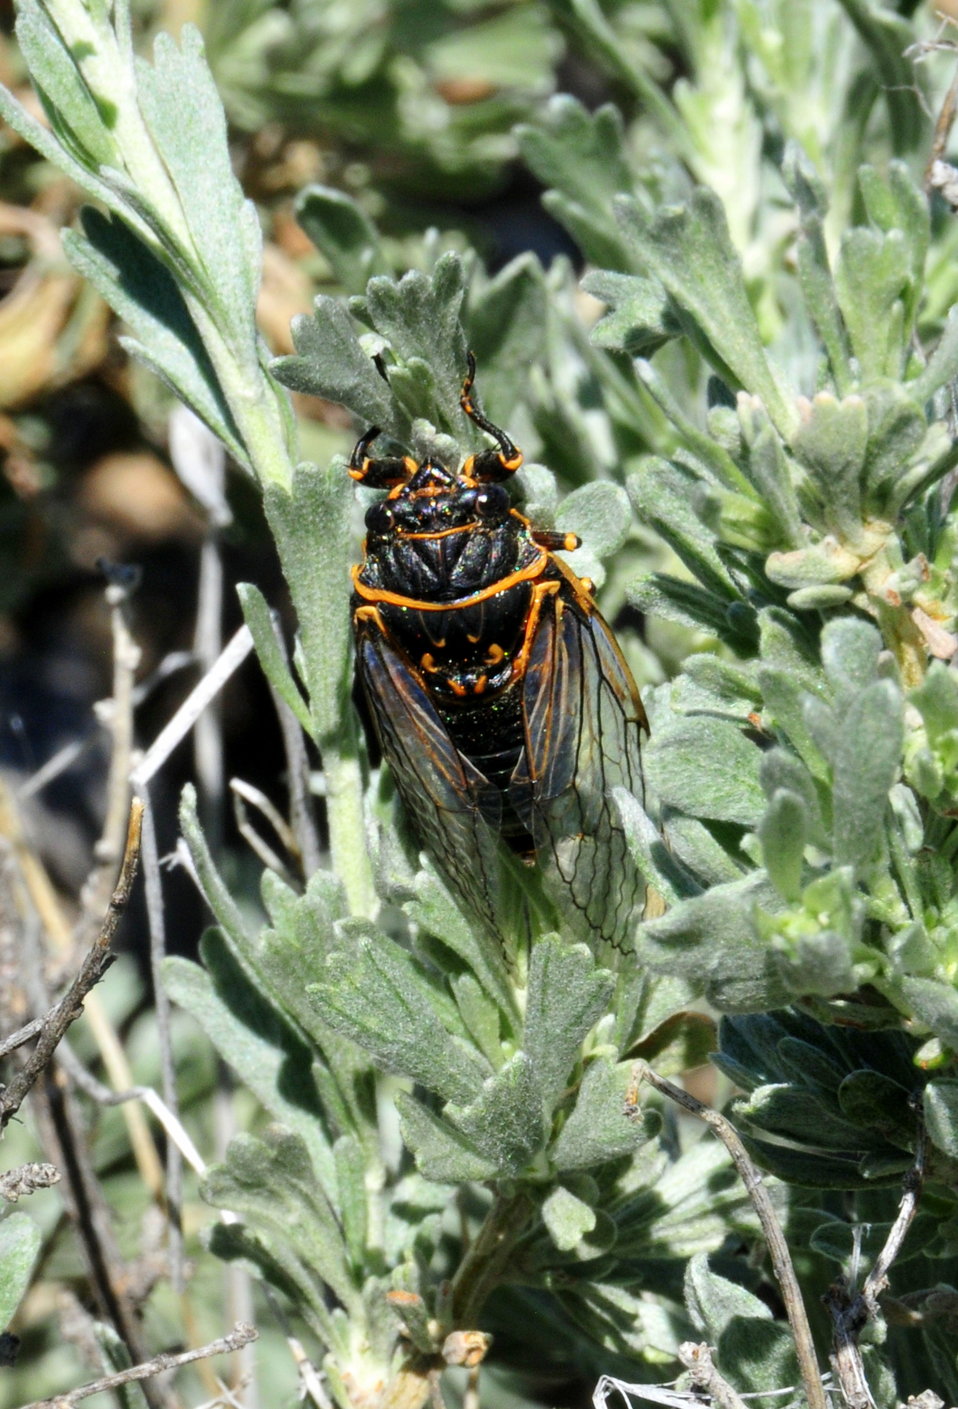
Sagebrush Cicada (Okanagana luteobasalis) on Seedskadee NWR 01

Who knew cicadas live on sagebrush? This particular species of cicada feeds on sagebrush roots when in its larval stage. After two to five years, it emerges as an adult, mates, lays eggs, eggs hatch in to larval form and burrow down along a sagebrush root where they remain until emerging two to five years later. When they emerge as adults, they make a high pitched resonating sound. Some years, very few cicadas can be heard. Other years, such as this year in 2014, cicadas can be heard all across the landscape from late May to Mid June. Many bird species feed heavily on the adults and fish will actively feed on cicadas that fall in to the water.